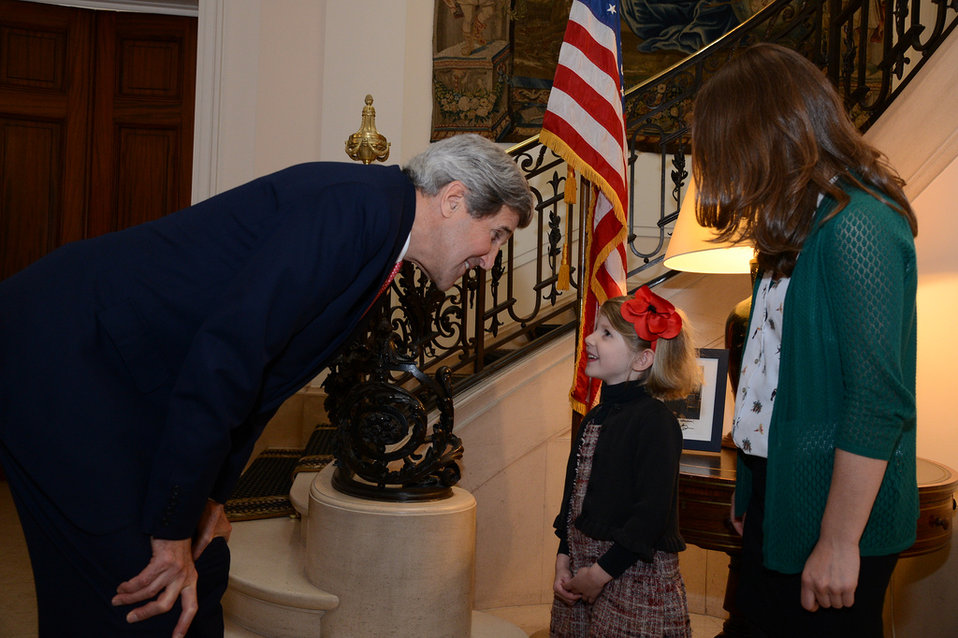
Secretary Kerry Meets the Daughter of an Embassy Employee

U.S. Secretary of State John Kerry greets the daughter of an embassy employee at the Tri-Mission meet and greet in Brussels, Belgium, on April 22, 2013.